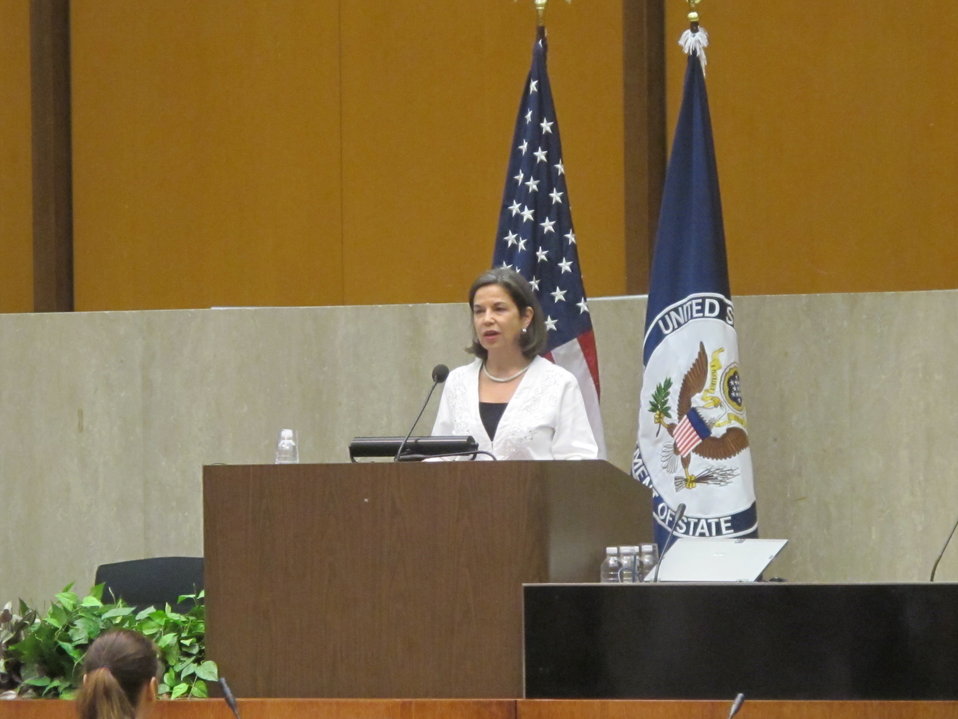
Under Secretary Otero Delivers the Keynote Address at the HACU Foreign Policy Briefing

Under Secretary of State for Democracy and Global Affairs Maria Otero delivers the keynote address at the Hispanic Association of Colleges and Universities (HACU) Foreign Policy Briefing, at the U.S. Department of State in Washington, D.C., on July 15, 2011.